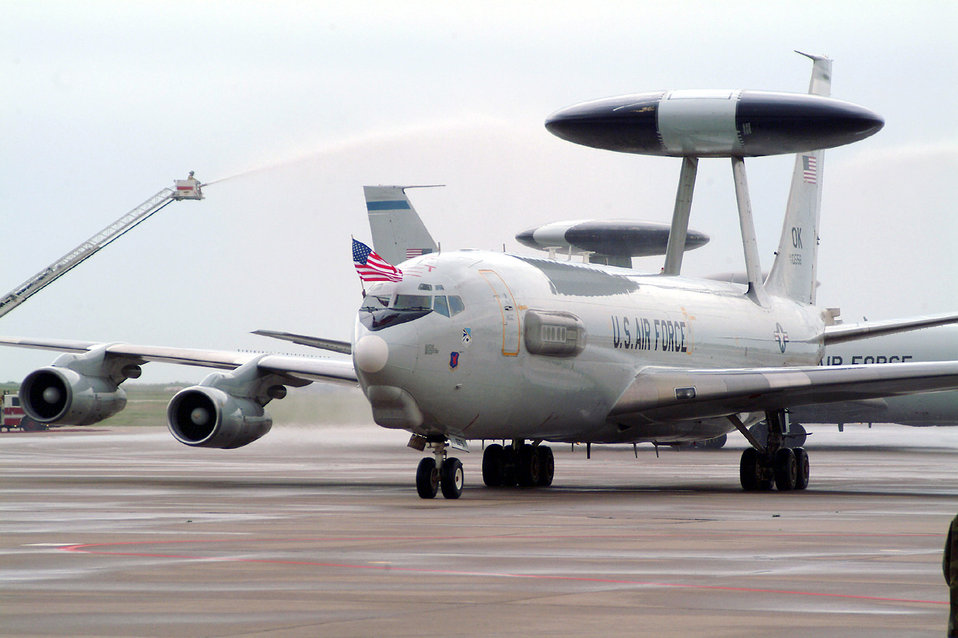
Return to Tinker

TINKER AIR FORCE BASE, Okla. (AFPN) -- One of five E-3 Sentry airborne warning and control system aircraft receive a traditional hosing-down upon returning here April 28. The aircraft were deployed supporting operations Enduring and Iraqi Freedom.